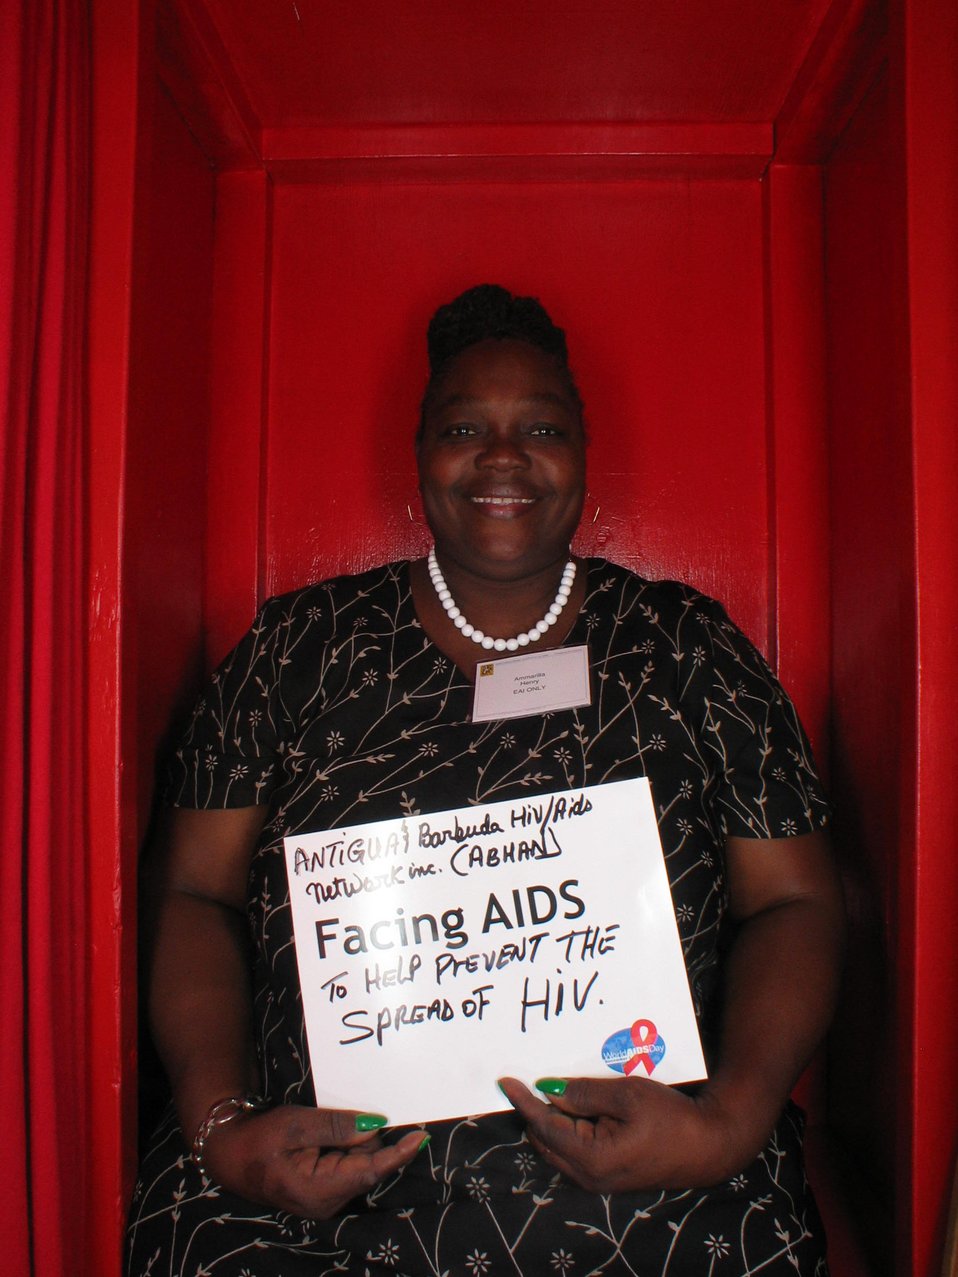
Facing AIDS to help prevent the spread of HIV.